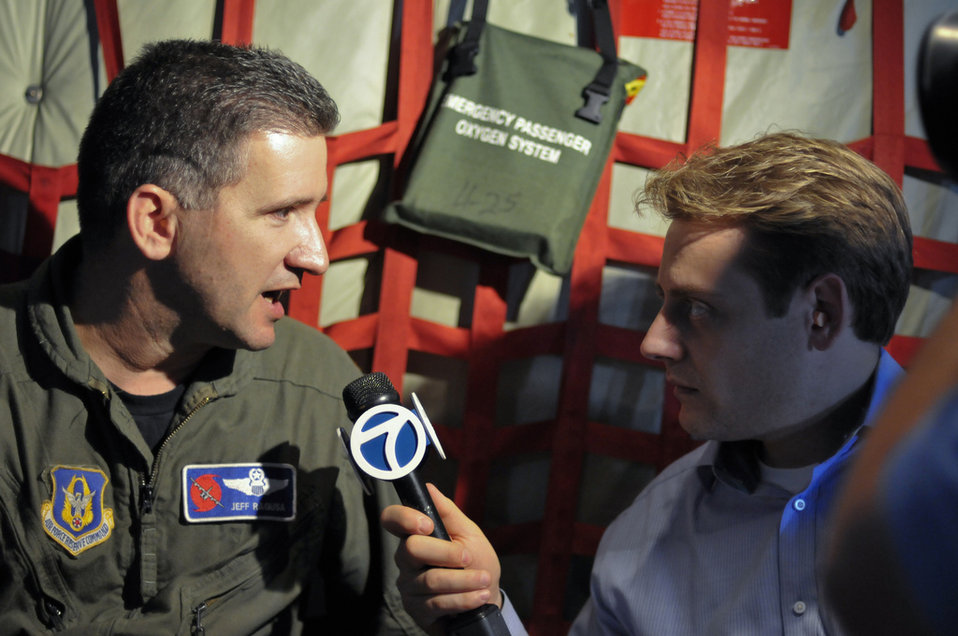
Hurricane Hunters

Maj. Jeff Ragusa, now a lieutenant colonel, is a pilot with the 53rd Weather Reconnaissance Squadron interviewed by on-air meteorologist, Todd Yakoubian onboard a WC-130J Hurricane Hunter aircraft during a mission into Hurricane Ike September 11, 2008.